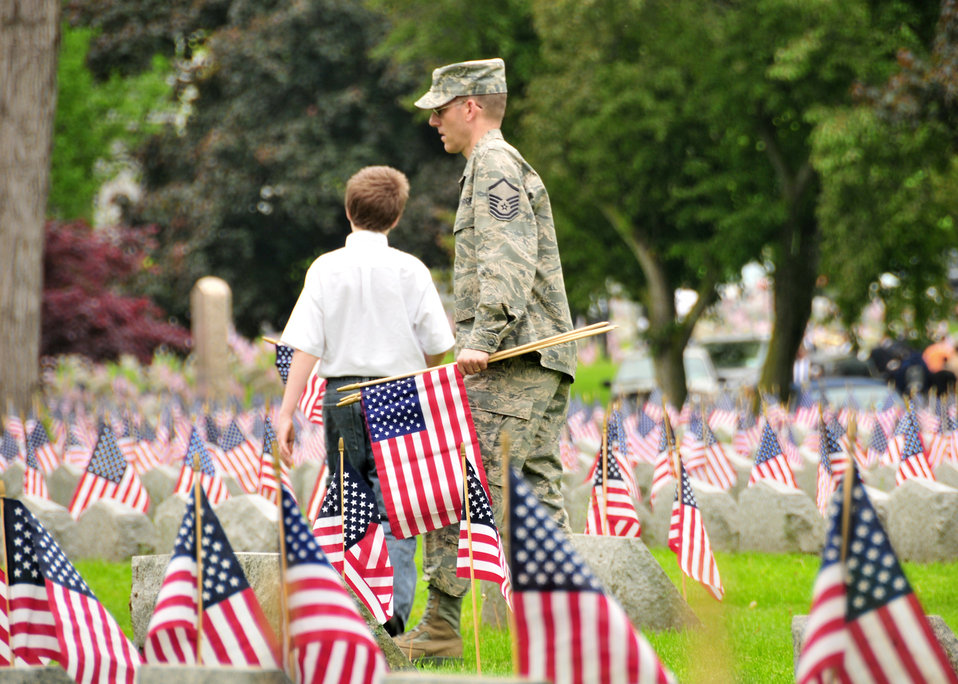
Honoring the fallen

Volunteers place American flags on graves during a Memorial Day ceremony May 30, 2011, at Forest Lawn Cemetery in Buffalo, NY.